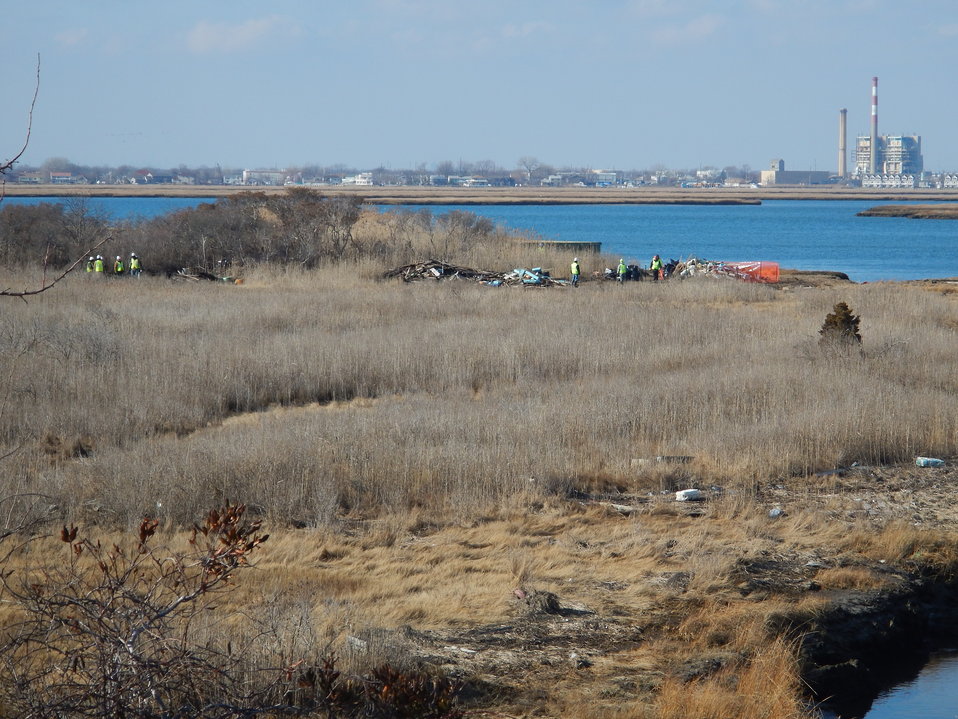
Lido Beach Cleanup-1

Cleanup crews begin a massive debris removal effort at Lido Beach Wildlife Management Area on Long Island.